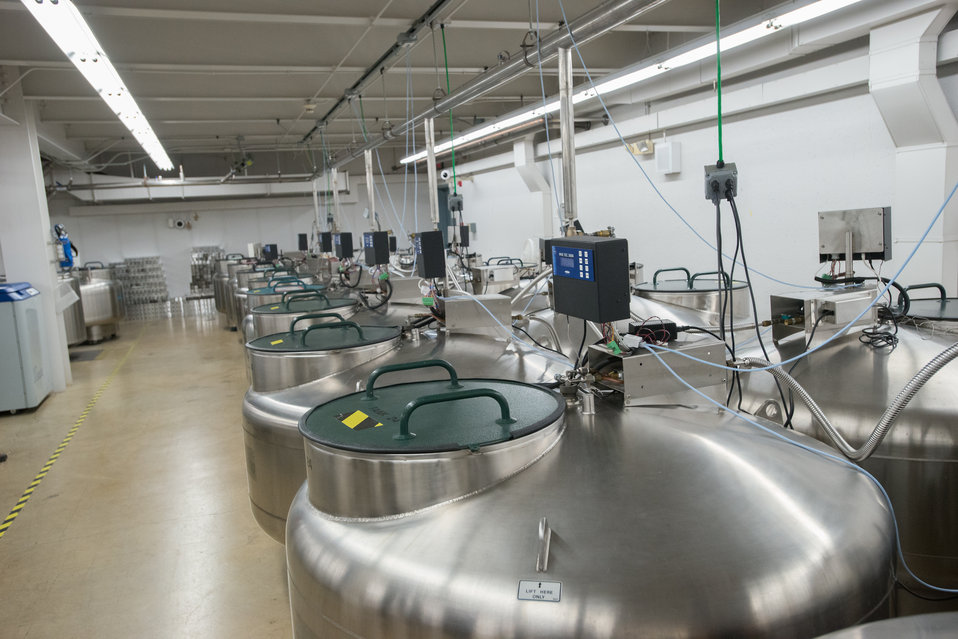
This is the U.S. Department of Agriculture's (USDA) Agriculture Research Service (ARS) National Center for Genetic Resources Preservation (NCGRP) Cryogenic Storage Vault in Ft. Collins, CO on Wednesday, Nov. 6, 2013. The vault currently operates more than 45 cryogenic tanks that hold animal germplasm, plant tissue culture, and seeds that are stored at -196 °C (-321 °F) in liquid storage or to -193 C. (-315 °F) in vapor storage degrees centigrade (-321 °F). NCGRP is the largest agricultural gene bank facility in the U.S. The NCGRP staff conducts groundbreaking research to develop more efficient and effective means for preserving plant and animal germplasm, and for better understanding the genetic structure of these invaluable materials. The research findings, preservation techniques, and specialized technology developed by the NCGRP have been adopted by gene banks around the world: many international scientists travel to the NCGRP for research and training.